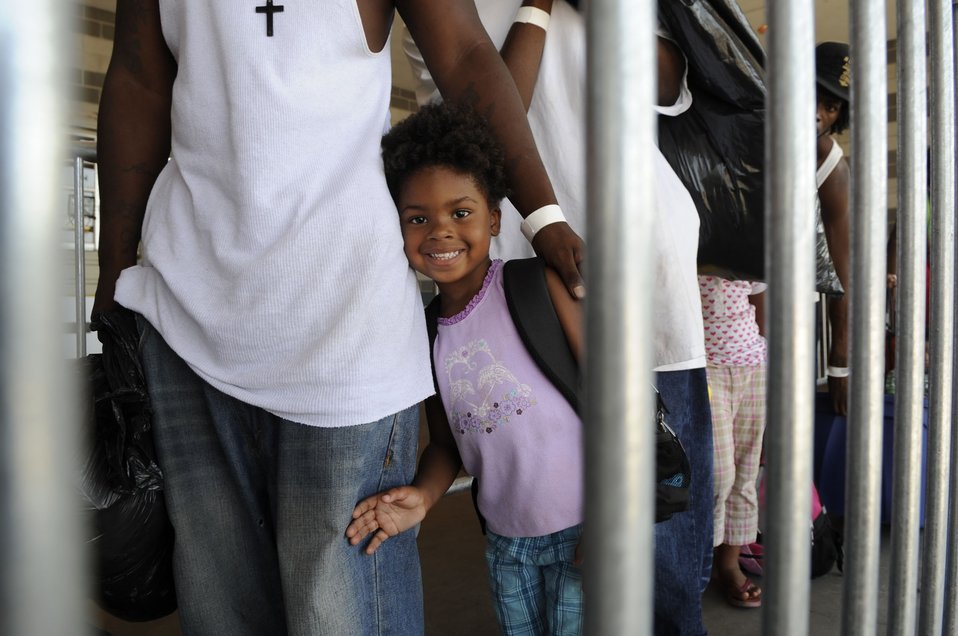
Hurricane Gustav

Arkel Greyhouse and other evacuees of Hurricane Gustav arrive at the Louis Armstrong International Airport, New Orleans, to board flights The Federal Emergency Management Agency and The Department of Defense have provided to transport citizens who otherwise could not leave on their own to destinations safely outside the hurricanes path, Aug. 30.